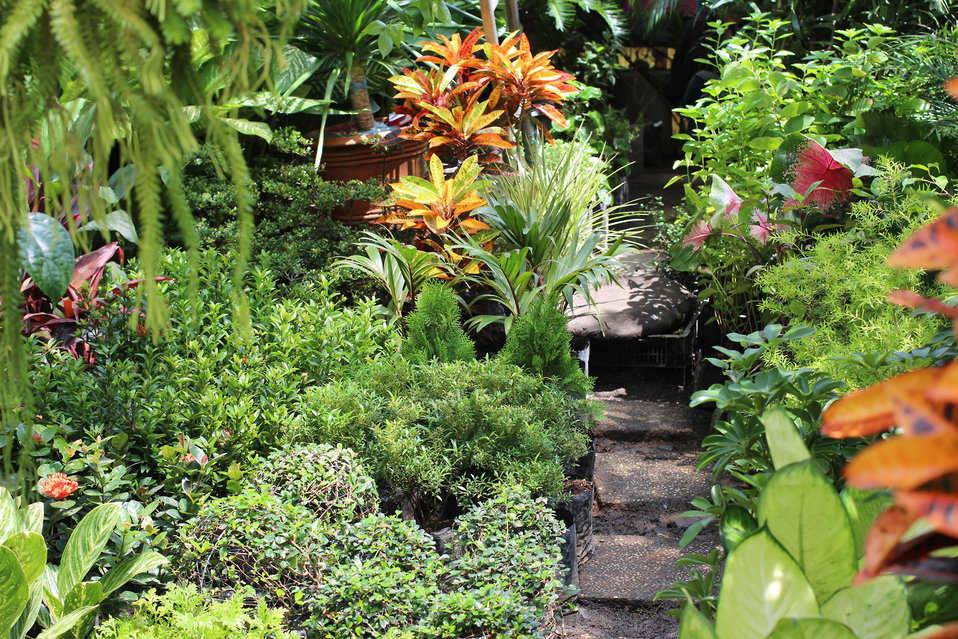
Philippine garden

A garden in the philippine seedling bank.